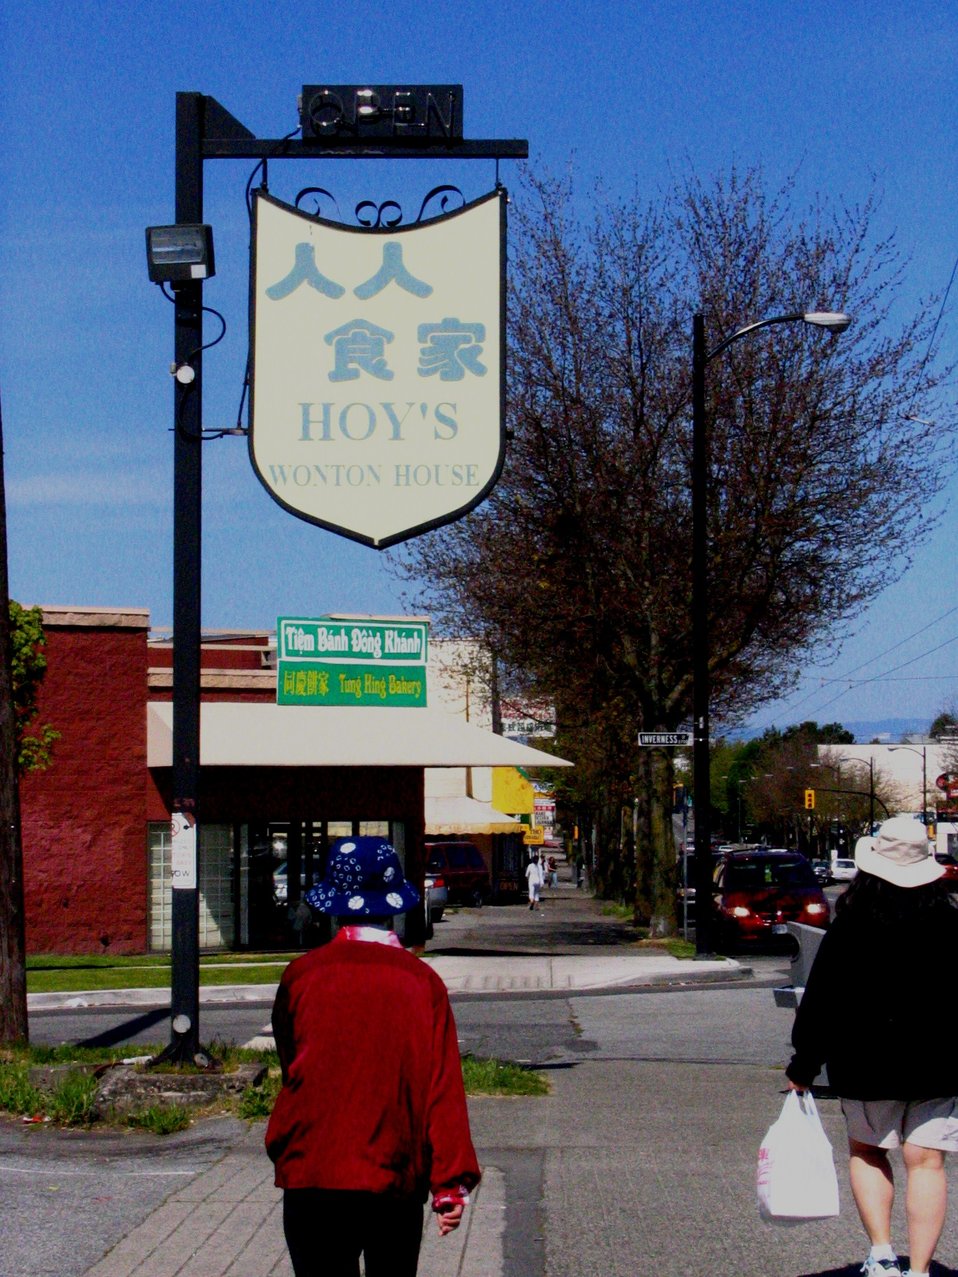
Picture taken by Martin Mullan (May 2006) of Kingsway (East Vancouver). Picture shows multi-cultural nature of street (Chinese and Vietnamese shopping).